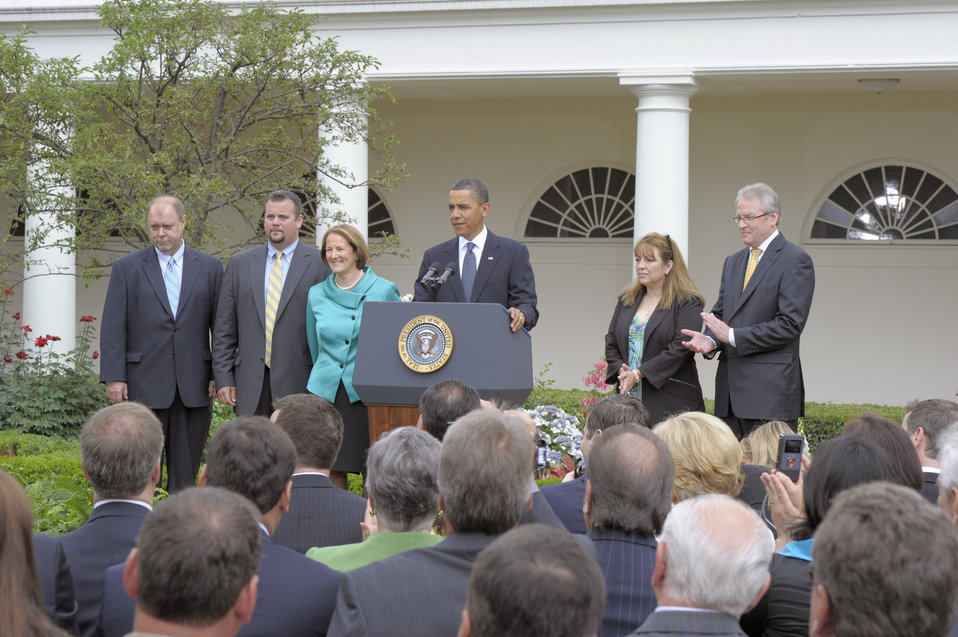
Gold Star Award

President Barack Obama addresses a crowd at the 2010 Small Business Association National Small Business Week event May 25, 2010, in Washington D.C.